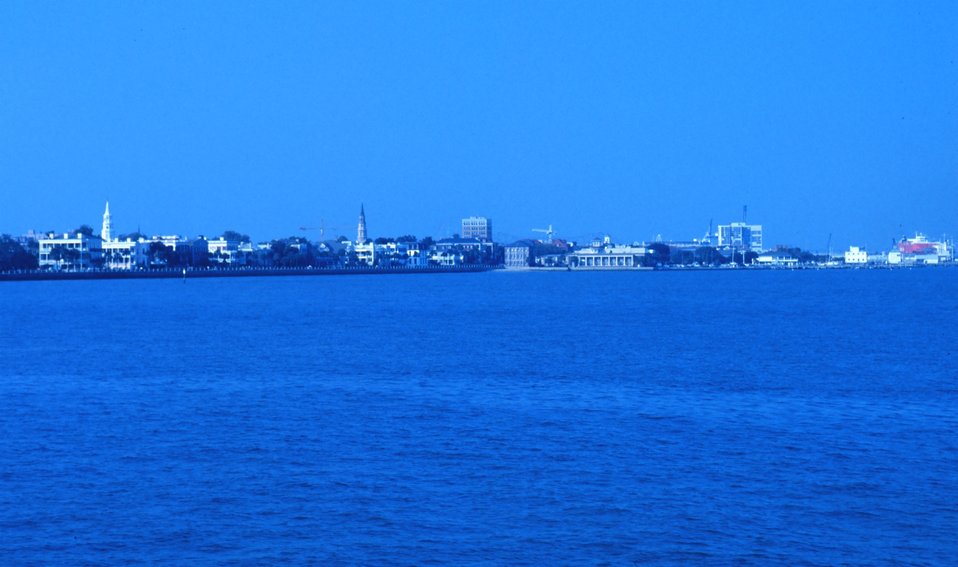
The city of Charleston as seen from the Fort Sumter tour boat.